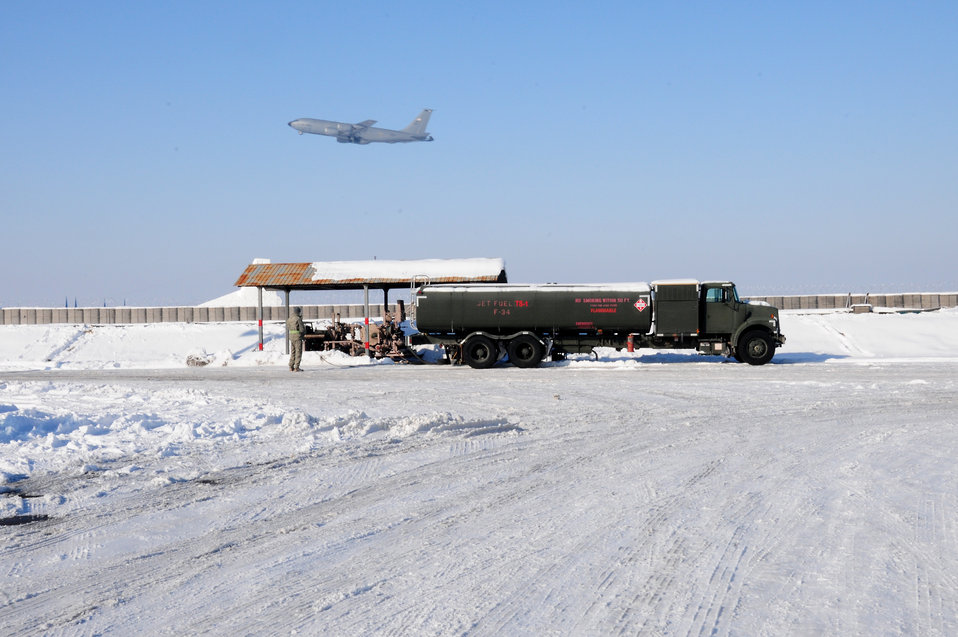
POL flight starts what could be 'benchmark' process

A KC-135 Stratotanker takes off Jan. 19, 2010, at the Transit Center at Manas Air Base, Kyrgyzstan. The 376th Expeditionary Logistics Readiness Squadron petroleum, oil and lubricants flight here was the first in the area of responsibility to implement a new pre-filter system for fuel which will save time and money and deliver better, cleaner fuel to the aircraft the KC-135 refuels.